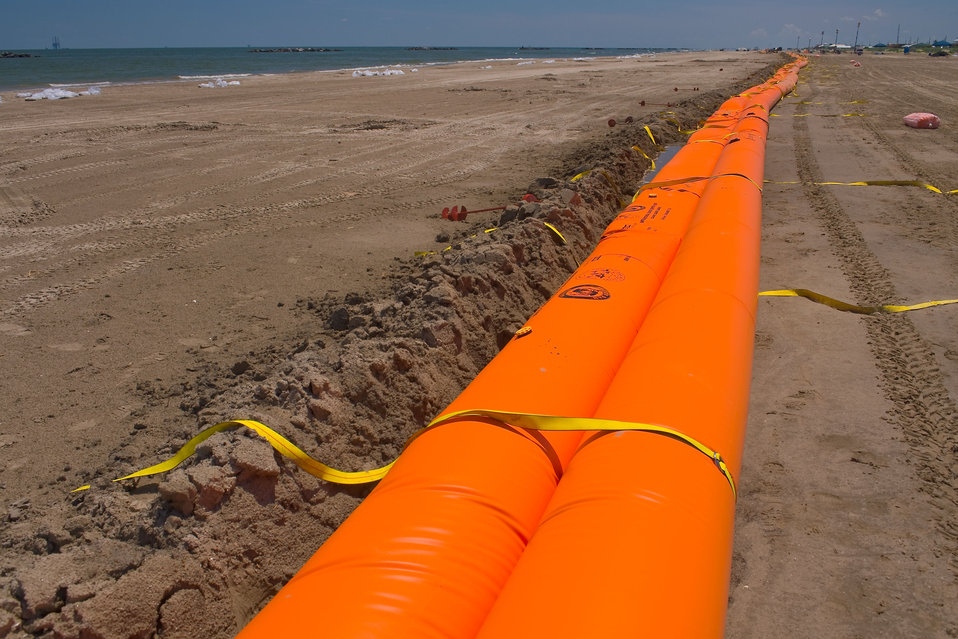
June 1, Flood control devices staged to block oil from washing inland